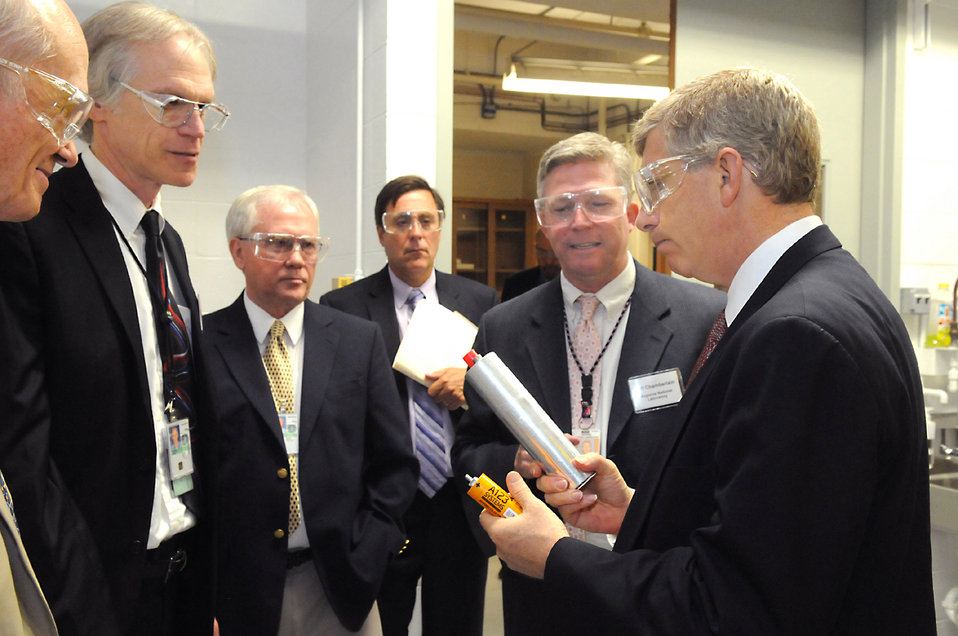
A visit to Argonne's energy storage program

Deputy Secretary of Energy Daniel Poneman visits Argonne National Laboratory's energy storage program. (Pictured left to right: Bill Brinkman, Director of the Office of Science; Ira Bloom, Gary Hendriksen, Mark Peters, Jeff Chamberlain, and the Deputy Secretary.)